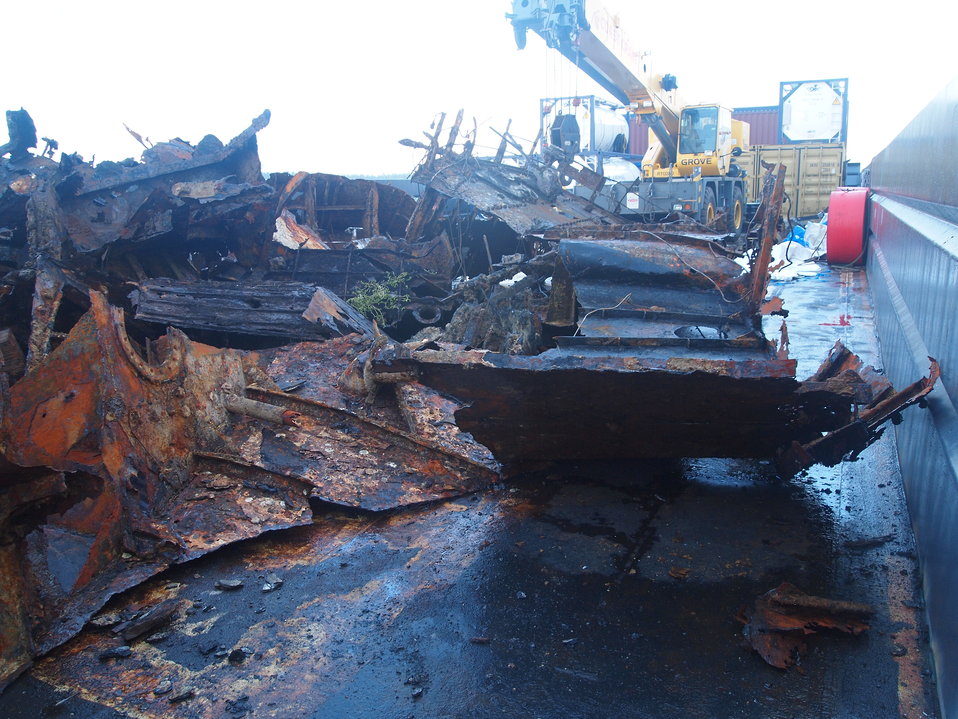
Shipwreck debris from Palmyra Atoll NWR.